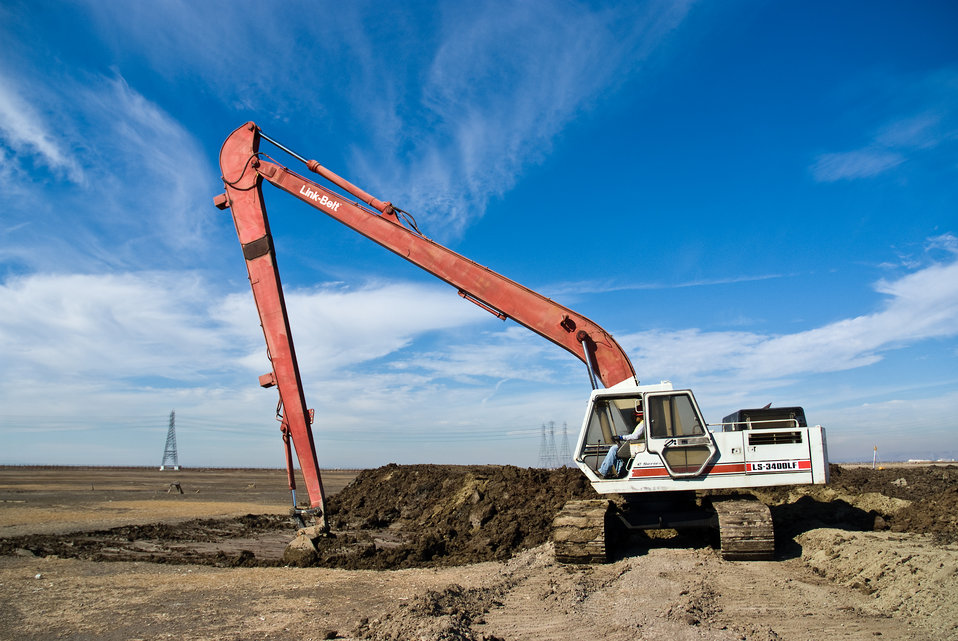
Restoration work at Don Edwards San Francisco Bay National Wildlife Refuge

Don Edwards San Francisco Bay National Wildlife Refuge restoration at site of Alviso, CA Pond A6 on the Don Edwards SF Bay NWR, an effort fo the South Bay Salt Pond Restoration Project that was funded, in part, with money from the federal stimulus act. November 2010